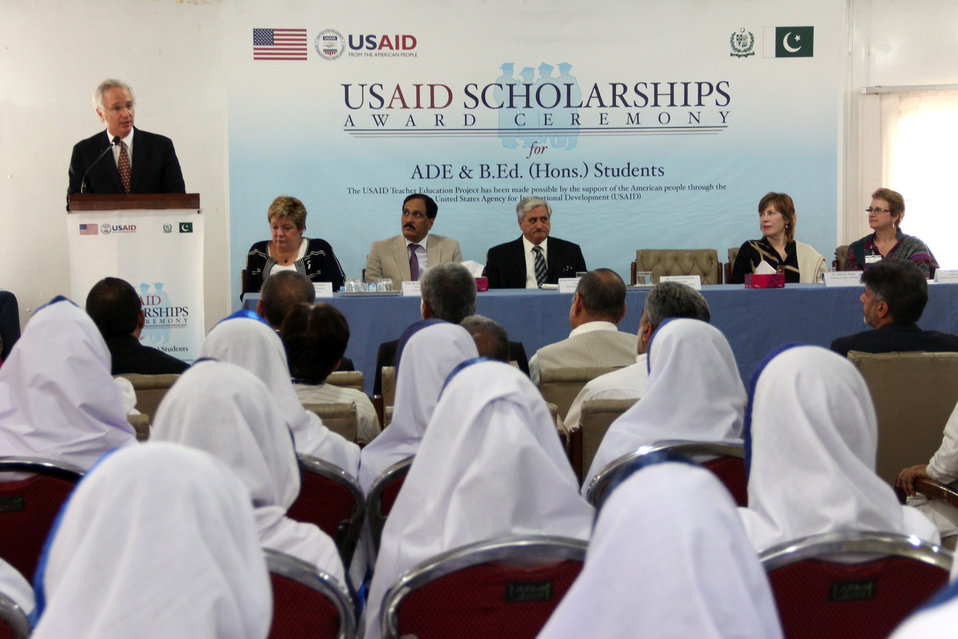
Scholarship distribution ceremony

Ambassador, US ; stage (L-R): Acting Mission Director USAID/Pakistan, Prof. Dr. Habib-ur-Rehman - Vice-Chancellor University AJ&K, Sardar Muhammad Yaqub Khan - President AJ&K, Ambassador's wife, Dr. Mary Lackie - Sr. Technical Director USAID Teacher Education Project